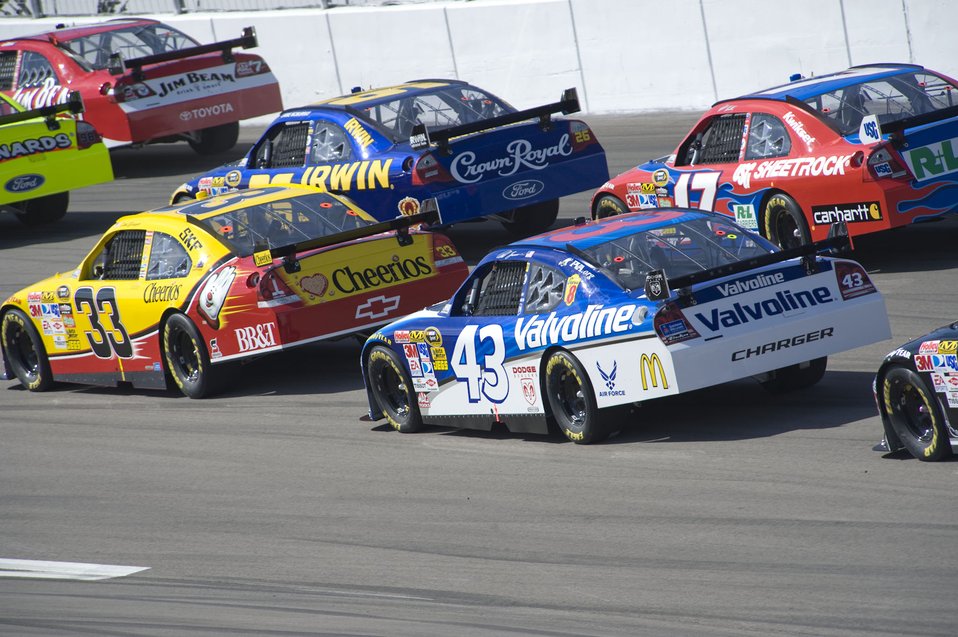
Air Force teams with NASCAR to aid recruiting

The Air Force sponsored No. 43 Dodge, driven by Reed Sorenson, lines up for the start of the Shelby 427 race March 1 at Las Vegas Motor Speedway. Mr. Sorenson, driver of the No. 43 Air Force sponsored Dodge, finished the race in 34th place after spinning in turn two on lap 138.